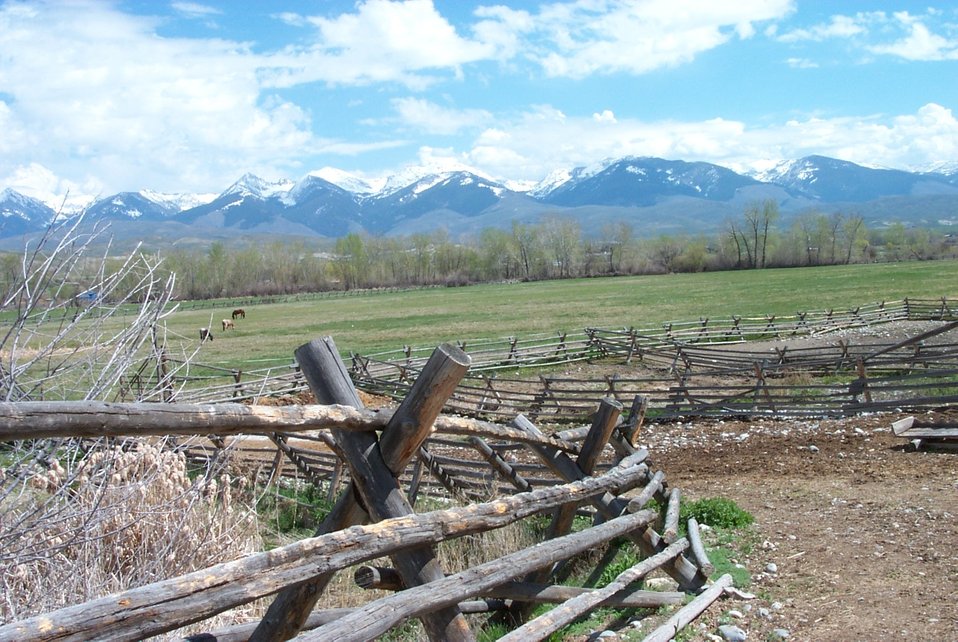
Realty Public access Exchange Salmon Field Office UCSC Upper Columbia Salmon Clearwater District